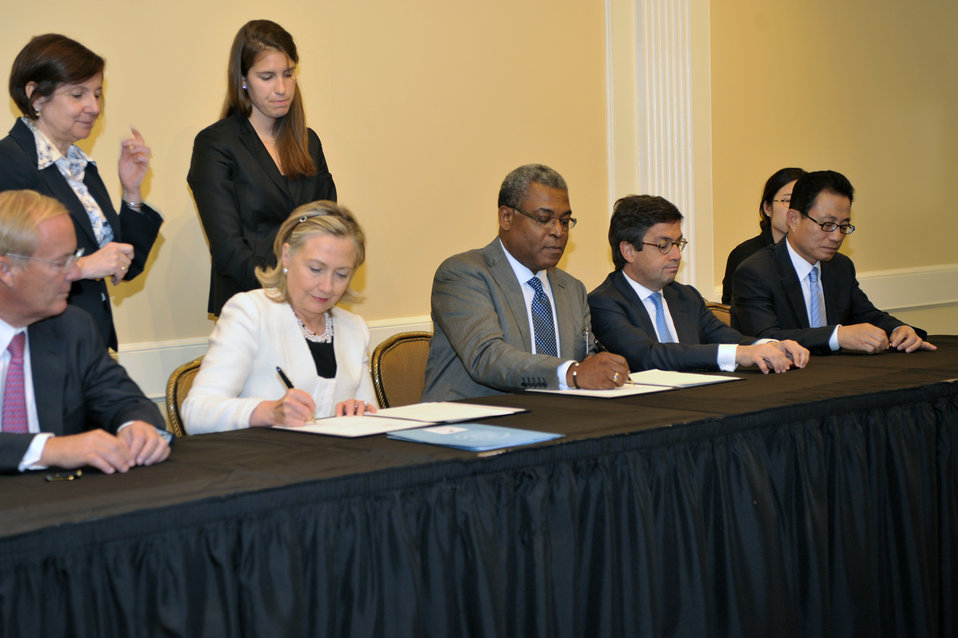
Secretary Clinton and Haitian President Bellerive Sign Two Memoranda of Understanding Regarding Haiti Recovery Projects

U.S. Secretary of State Hillary Rodham Clinton and Haitian Prime Minister Jean-Max Bellerive sign two memoranda of understanding regarding Haiti recovery projects at the InterContinental hotel in New York, New York, on September 20, 2010.